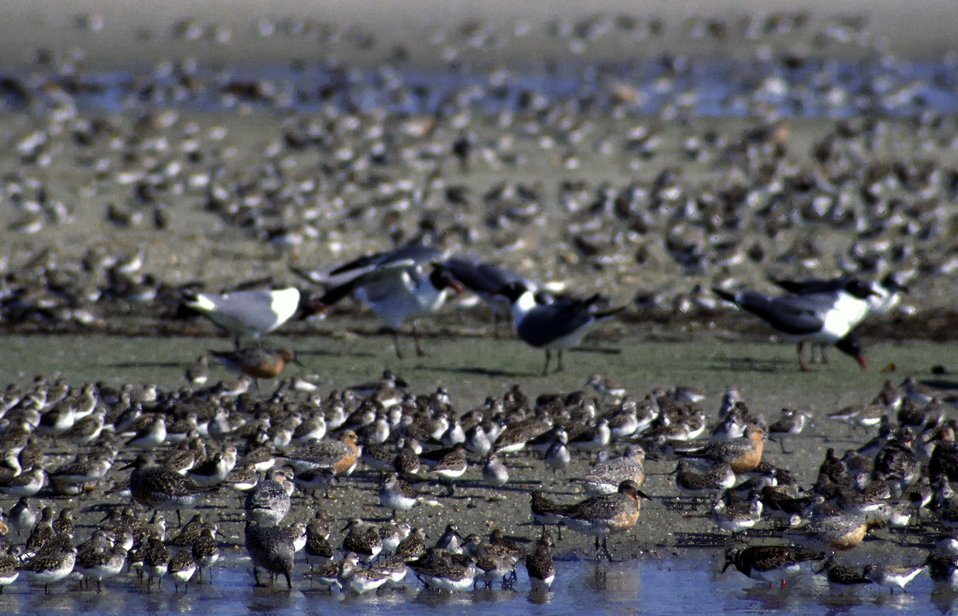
Shorebirds

Reed's Beach, NJ.